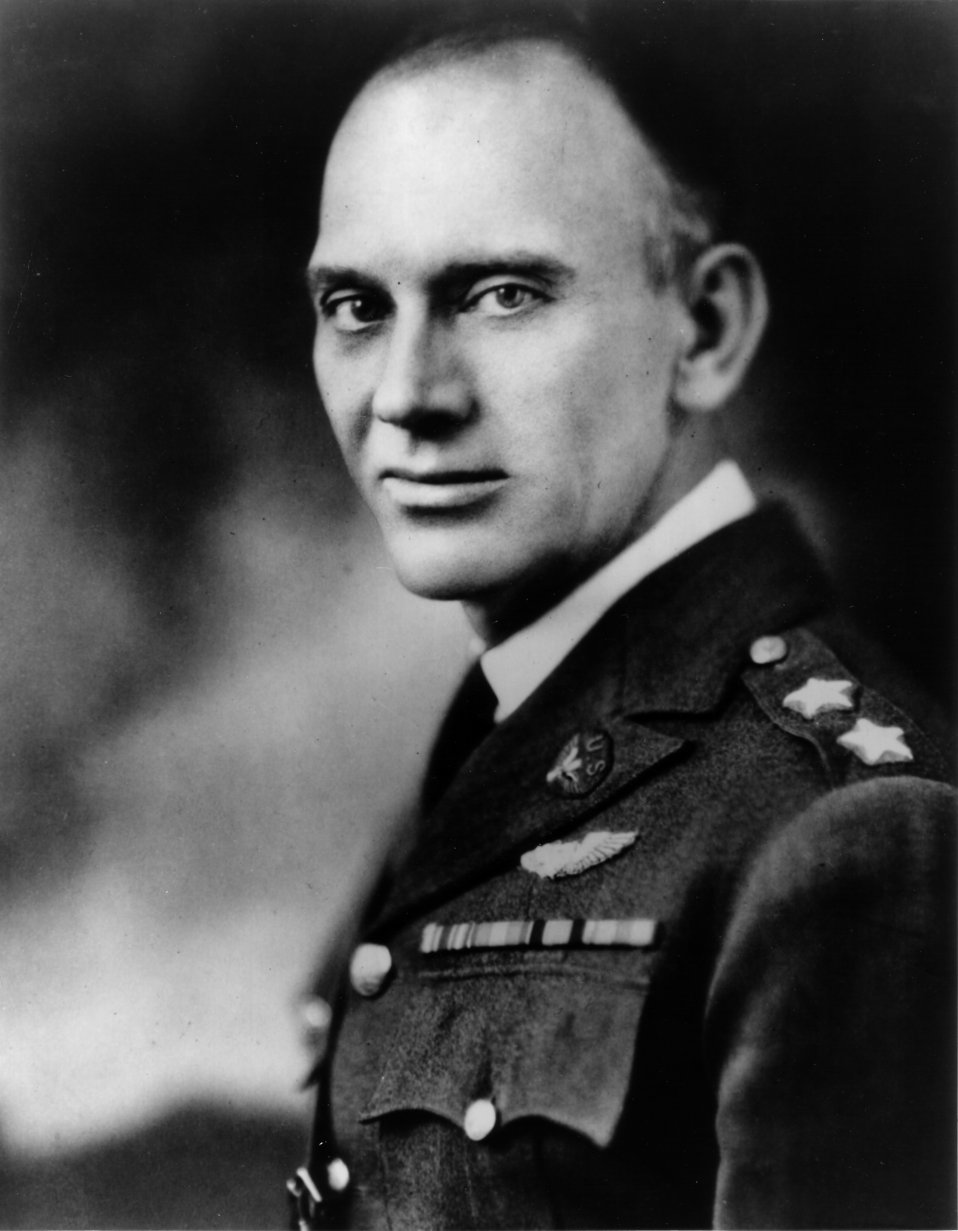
Major General James E. Fechet

EARLY YEARS -- James E. Fechet was chief of the Army Air Corps from 1927 to 1931. During his long career, he saw America's air arm grow from three men to more than 2,300,000. Considered one of the founding fathers of the independent Air Force, he helped airpower prove its promise.